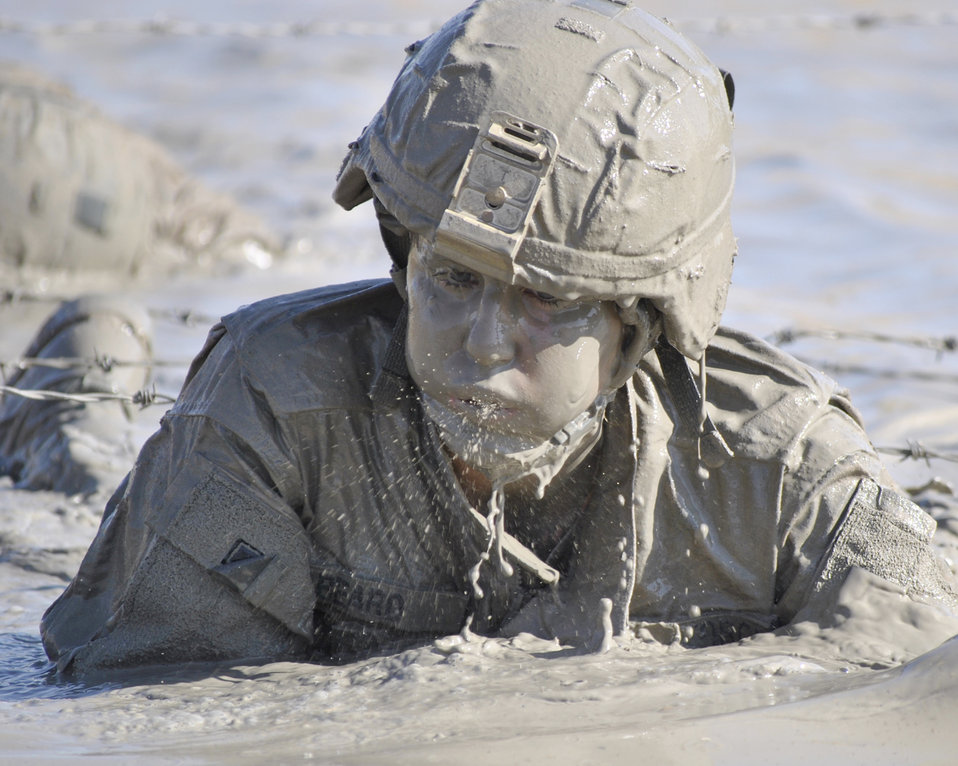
Airman marches, low-crawls and sweats her way into history: Part two

Senior Airman Courtney Beard low-crawls through a mud pit Nov. 21, 2010, at Victory Base Complex, Iraq. The Brooklyn, N.Y., native was the first female Airman to complete the 18-hour Spur Ride, a series of mental and physical tests, held by the III Corps, Task Force Phantom. Airman Beard is a 467th Expeditionary Intelligence Squadron intelligence analyst.